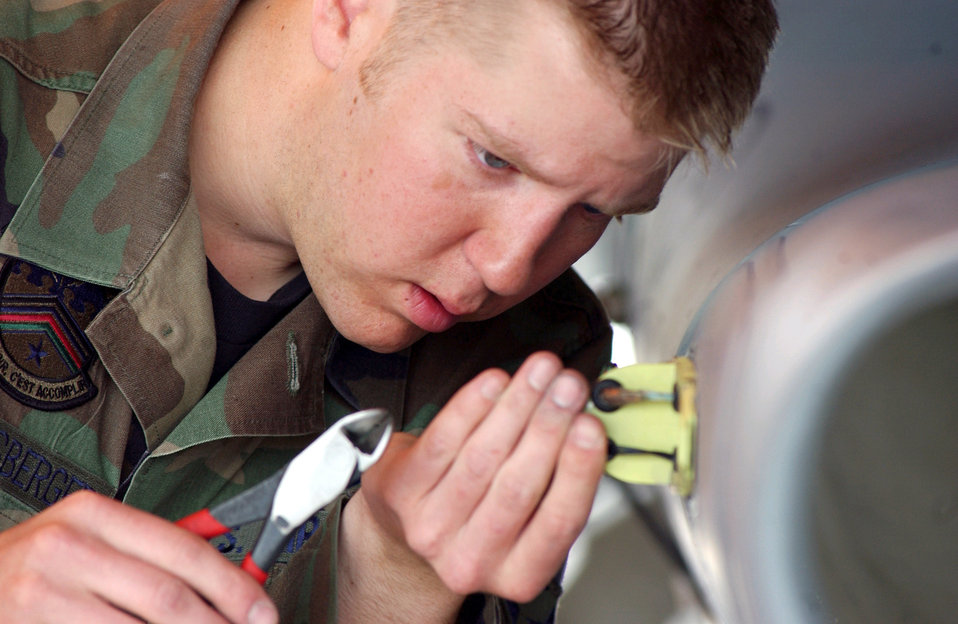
The edge

EIELSON AIR FORCE BASE, Alaska -- Senior Airman Michael Zwiselsberger works on a inlet navigation light for an F-16C Fighting Falcon during exercise Northern Edge 04 here June 8. Airman Zwiselsberger is a crew chief with the 354th Maintenance Squadron and the F-16C is assigned to the 18th Fighter Squadron. Northern Edge is Alaska's annual joint-training exercise.